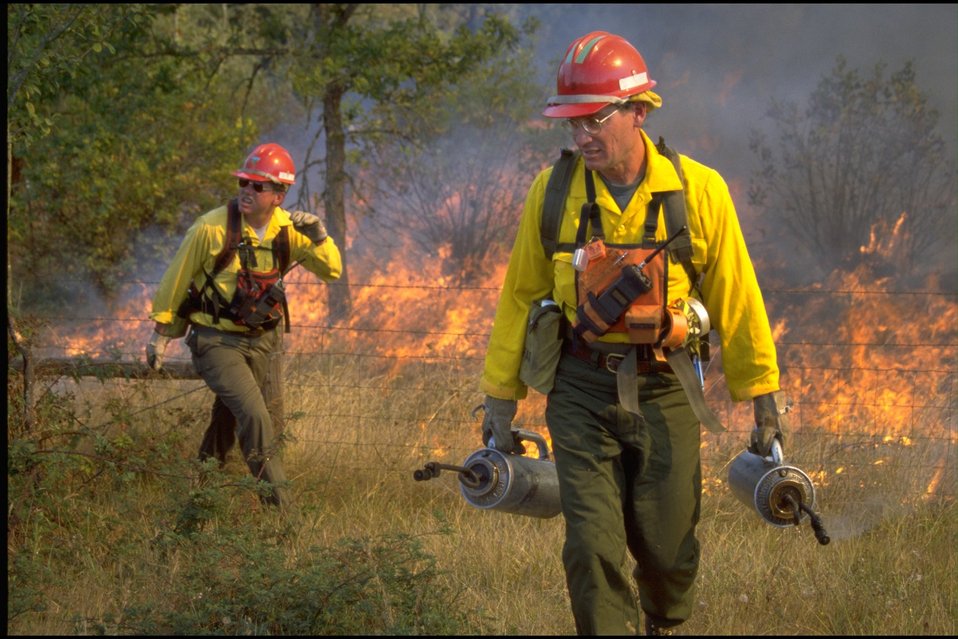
Long Tom ACEC burn (Eric Meyers and Dave Schroeder).